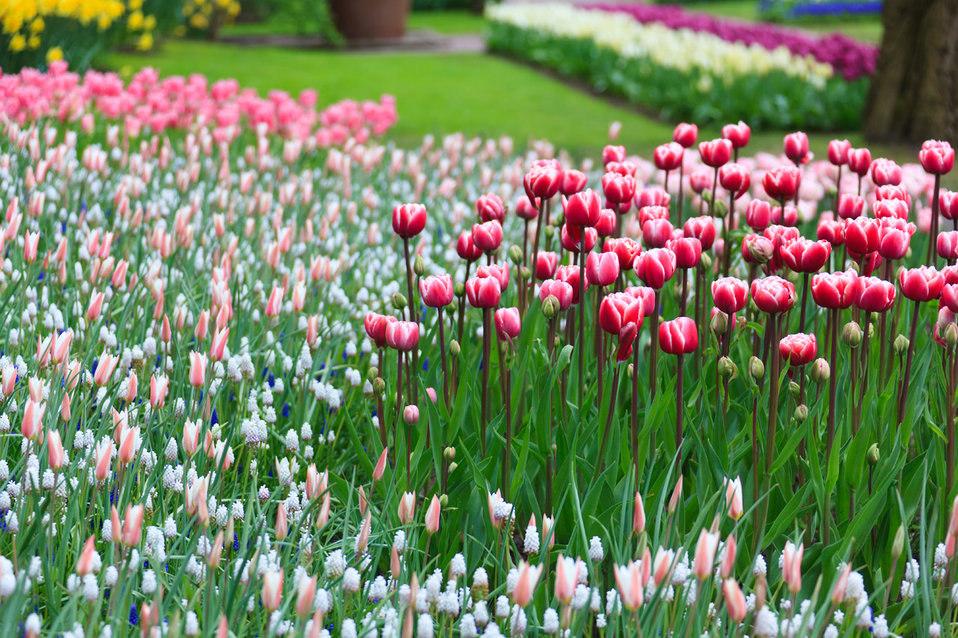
Blooming flower garden in spring.